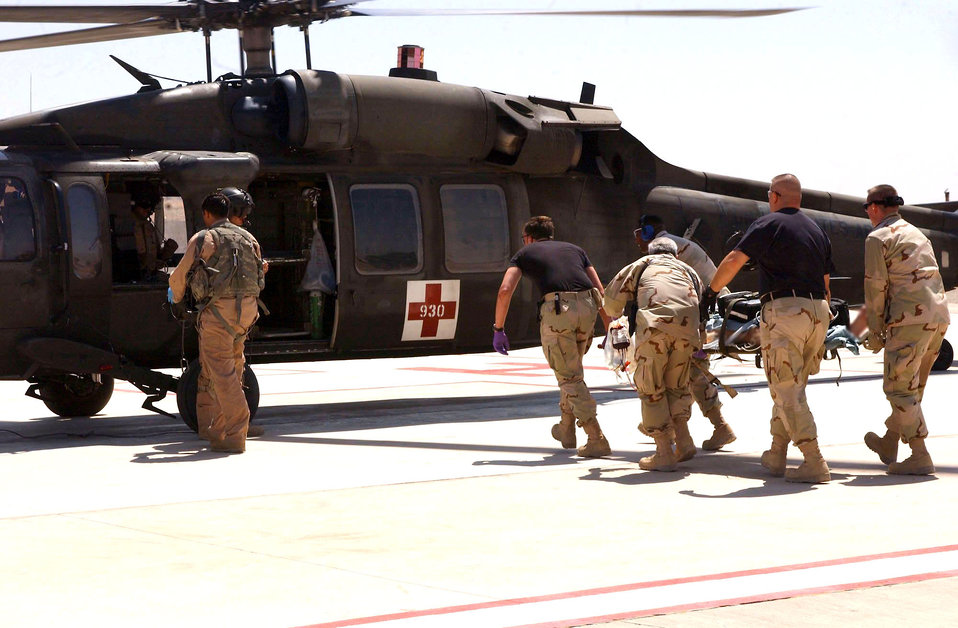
Medical evacuation

Airmen with the 506th Expeditionary Medical Group at Kirkuk Air Base, Iraq, load an injured patient on an Army UH-60 Black Hawk for medical evacuation on Wednesday, June 21.